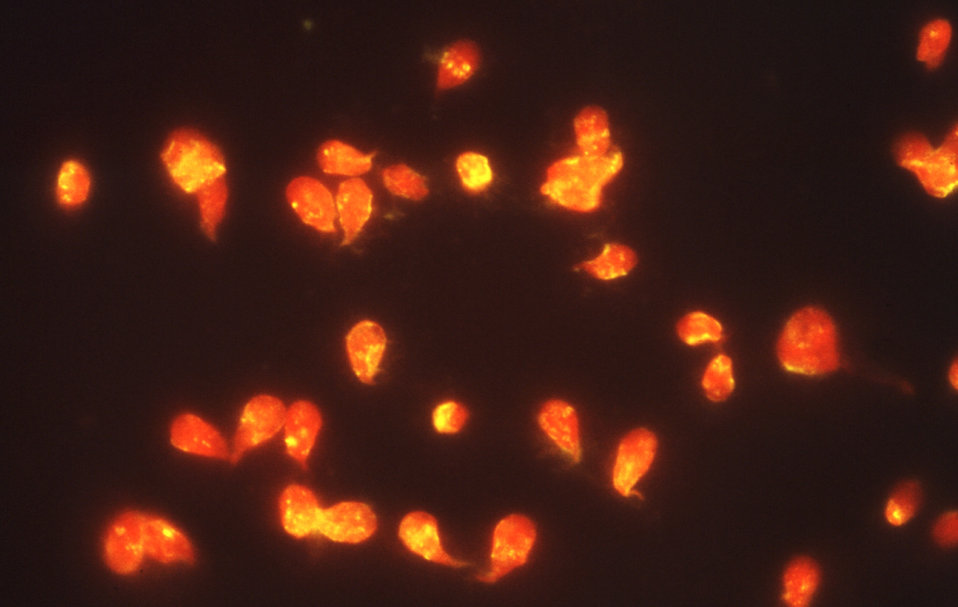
This photomicrograph depicts Giardia lamblia parasites using an indirect immunofluorescence test for giardiasis.